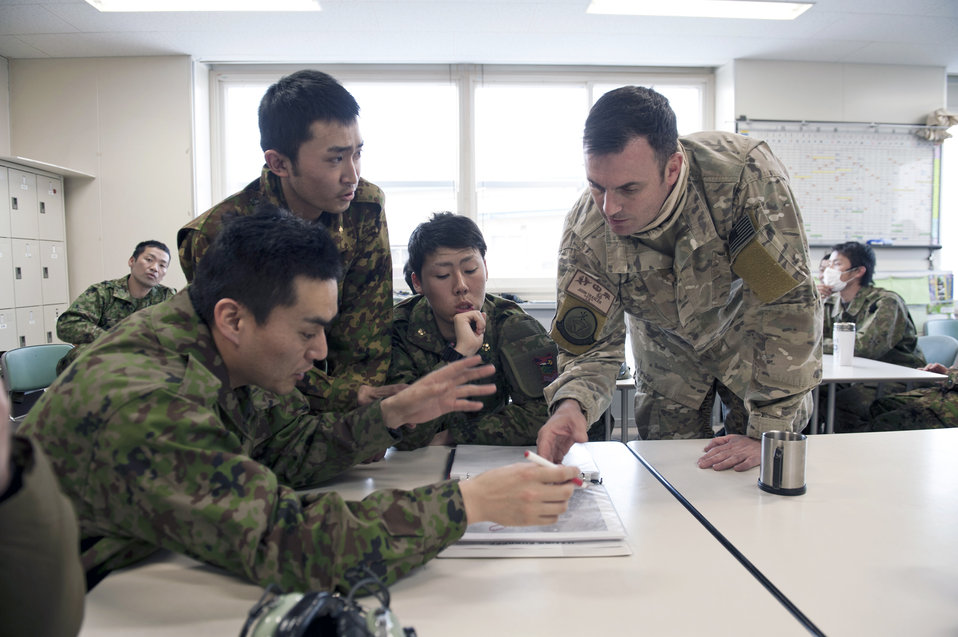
Yamagata a fuel staging area

U.S. Air Force Maj. John Traxler, the 320th Special Tactics Squadron commander, and members of the Japan Ground Self-Defense Force discuss the possibility of using Yamagata as a fuel staging area here March 13, 2011. The area would be used to refuel aircraft assisting with Japan's earthquake and tsunami recovery efforts.